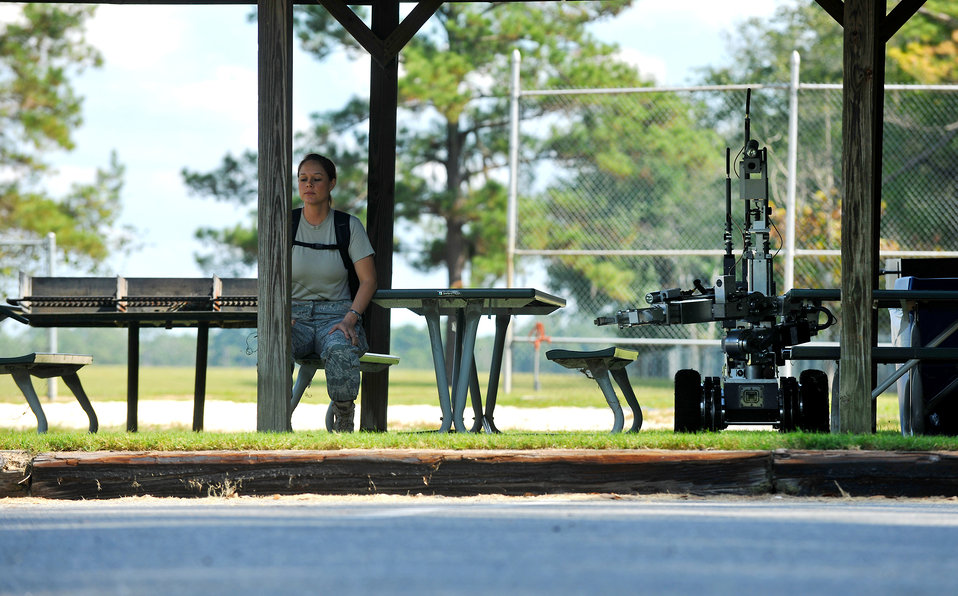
EOD team trains with new response vehicle

Staff Sgt. Rhianna Hall waits for an F6-A explosive ordnance disposal robot to assist her during a training exercise Oct. 13, 2010, at Moody Air Force Base, Ga. Technicians from the 23rd Civil Engineer Explosive Ordnance Disposal Flight tested out their new Bomb Squad Emergency Response Vehicle during the exercise to test its ability to respond in emergency situations. Sergeant Hall is the combat arms training and maintenance range instructor assigned to the 23rd Security Forces Squadron.